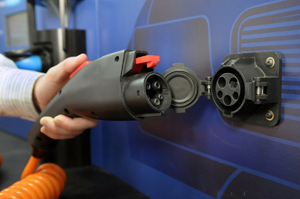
AT ARGONNE NATIONAL LABORATORY, THE SOCIETY OF AUTOMOTIVE ENGINEERS (SAE) J-1772 PLUG-IN VEHICLE CONNECTOR FACILITIES BOTH CHARGING AND COMMUNICATION.

ANL researchers are helping create codes and standards that will enable widespread adoption of electric-drive transportation with smart grid interoperability. The SAE J-1772 connection standard will enable manufacturers to build compatible plugs and vehicle sockets that support both charging and two-way communication with utility companies.